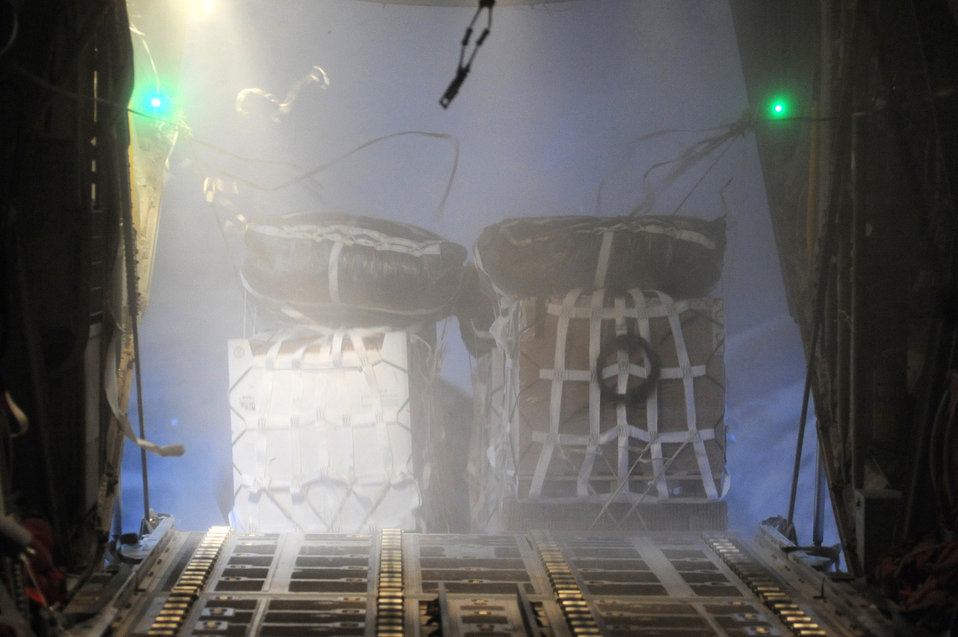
Supplies to remote Afghanistan bases

A C-130J Super Hercules releases 16 container delivery system bundles Oct 7, 2010, for a remote forward operating base in Afghanistan. The supplies delivered will replenish ground forces with water, food and supplies needed to help sustain their living conditions.